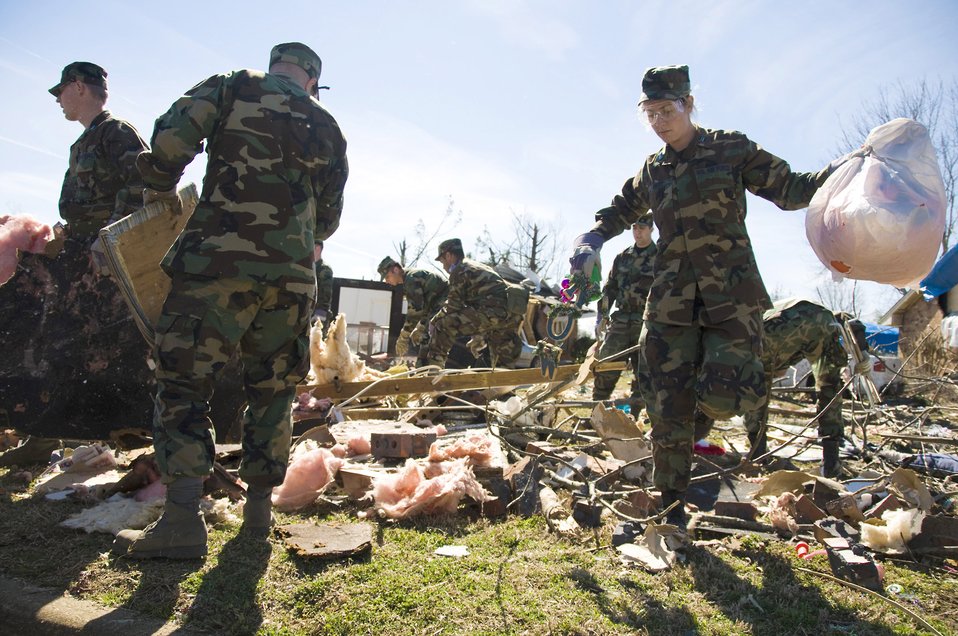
Maxwell Airmen assist city devastated by tornado

More than 65 Officer Training School basic officer trainees and 20 other Airmen assigned to Maxwell Air Force Base, Ala., clear debris Feb. 19 caused by a Feb. 17 tornado that stormed through Prattville, Ala. The city is located 15 miles northwest of the base. Latest estimates indicate that more than 150 home were destroyed and 760 homes were damaged in a series of storms that created 150 mph winds. Of those homes, approximately 25 military homes were destroyed and 170 were damaged.